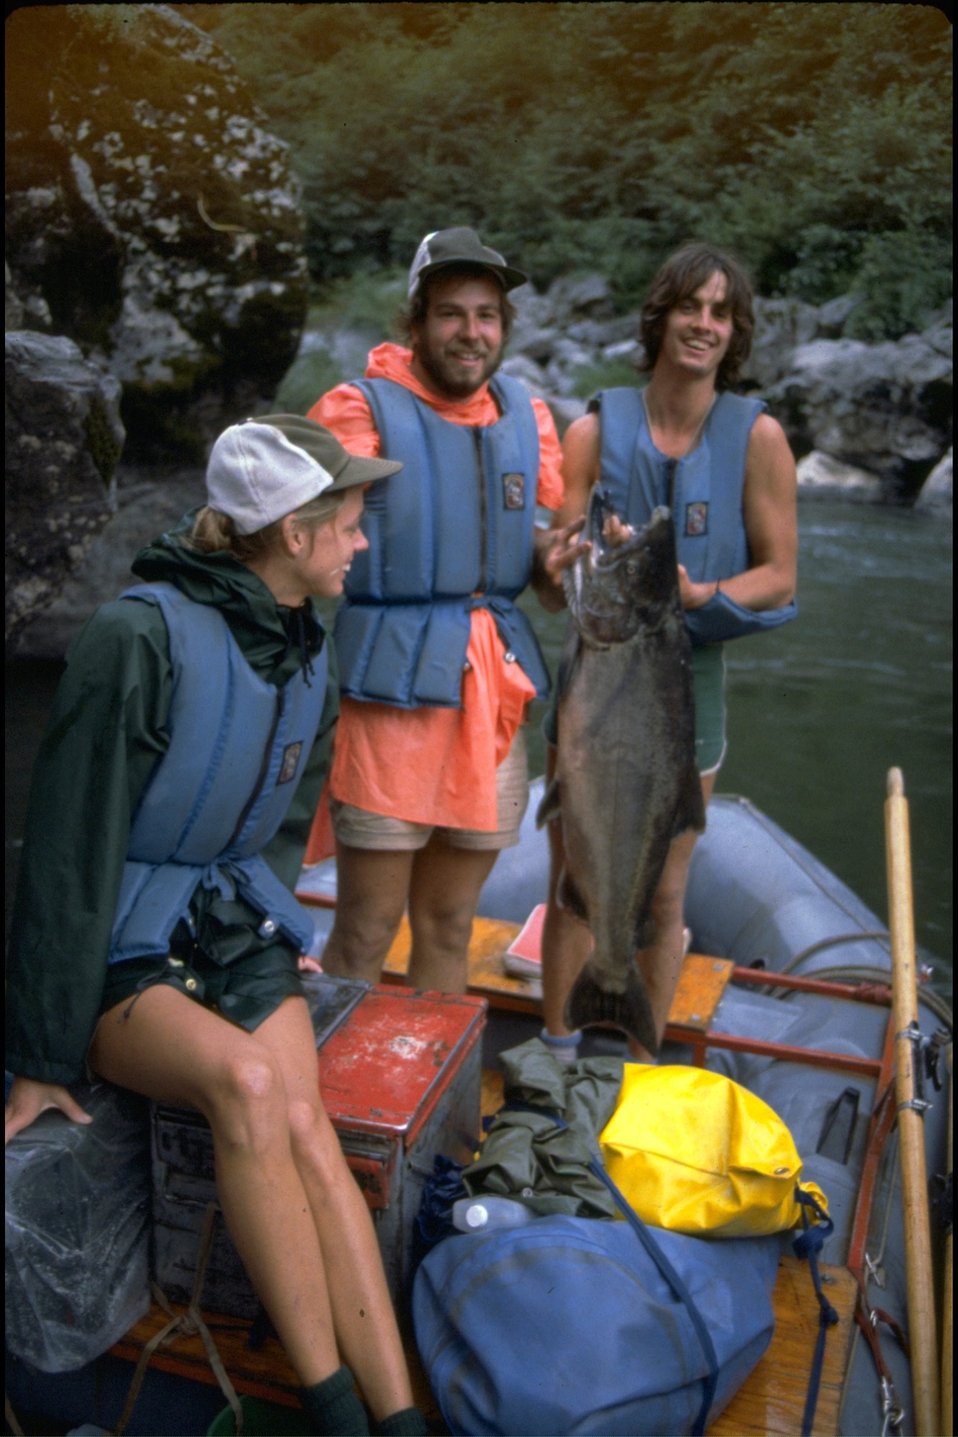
Rogue River - Fishing party.